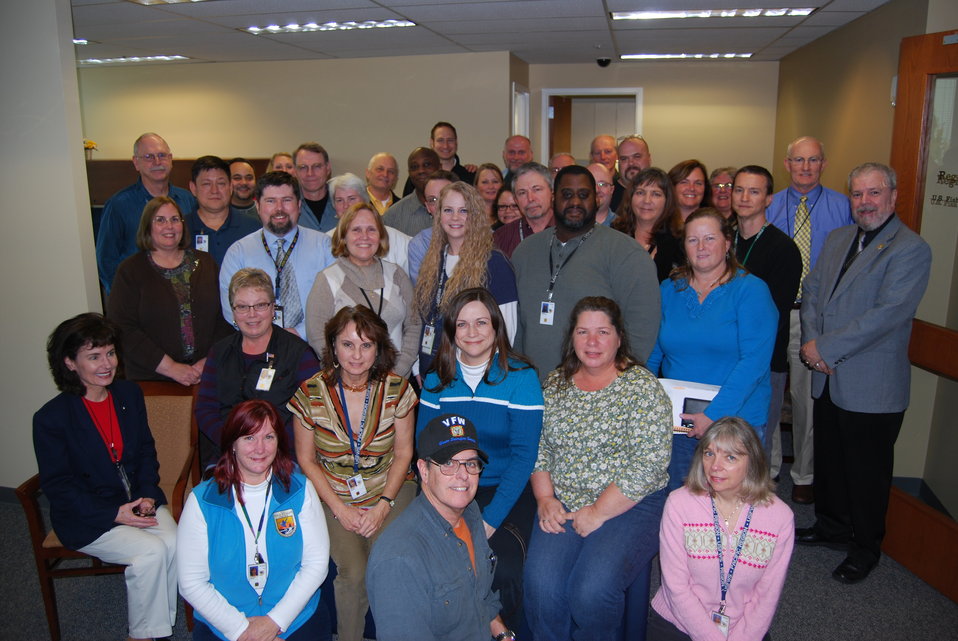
Pacific Region Veterans

The Pacific Regional Director had a coffee reception for the Service's Veterans. Here is a group shot of just some of the Pacific Region's past military members (it seems that the Navy won out as being the branch with the most Service Employees).